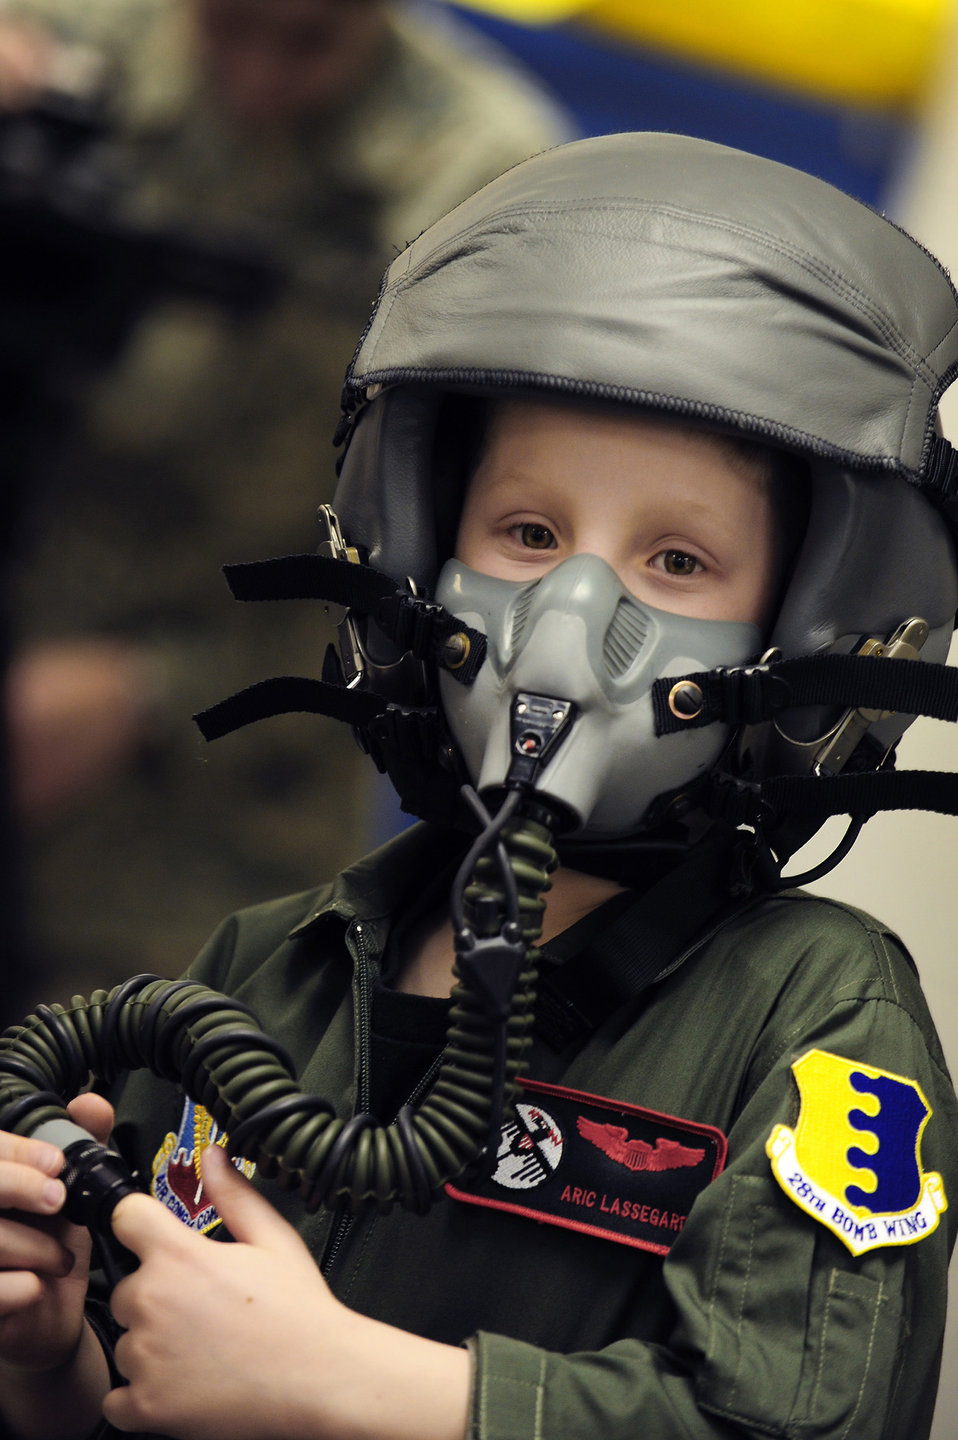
Best day ever

Aric Lassegard wears an HGU-55/P aircrew helmet with the MBU-12/P oxygen mask attached Jan. 13, 2011, at Ellsworth Air Force Base, S.D. Aric was treated as an honorary member of the 34th BS as part of the Aircrew for a Day program.